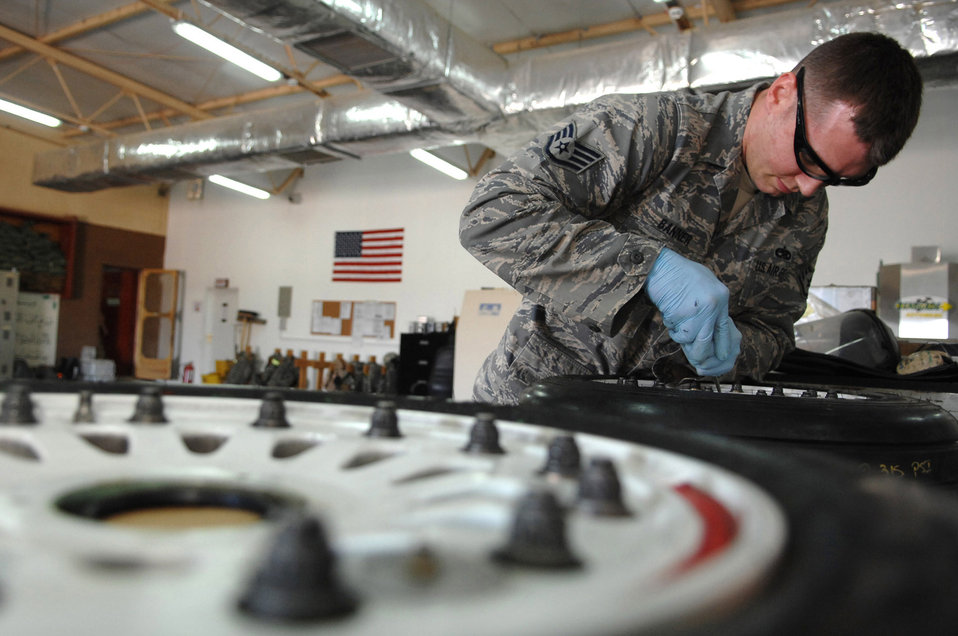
The wheels on the plane

Staff Sgt. Joshua Banner replaces retaining rings on an F-16 Fighting Falcon's main landing gear wheel at Balad Air Base, Iraq. The 332nd Expeditionary Maintenance Squadron provides combat-ready aircraft and munitions to the air component commander in support of coalition forces throughout Iraq. Sergeant Banner is a 332nd EMXS crew chief deployed from Seymour Johnson Air Force Base, N.C.